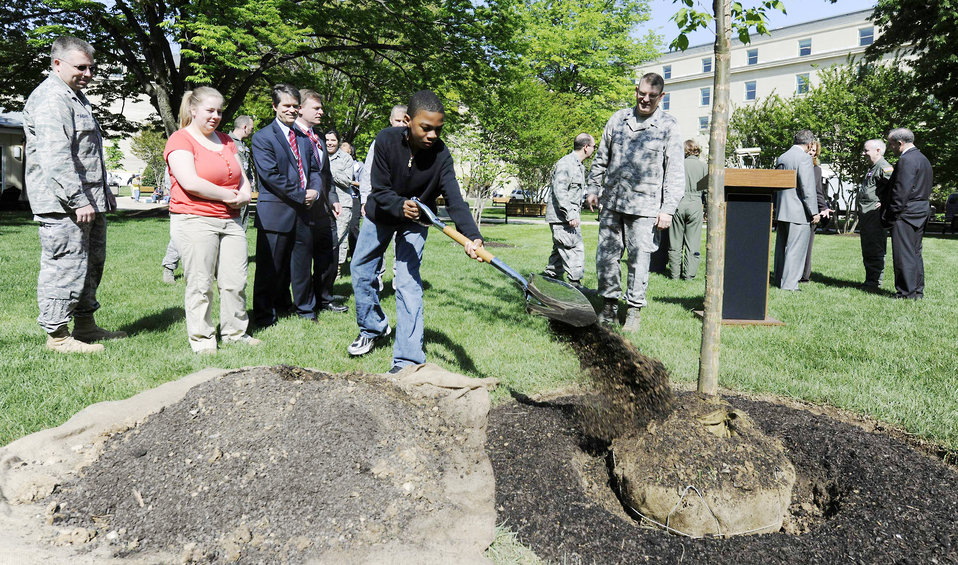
Pentagon officials join Air Force bases for '40 trees in 40 communities' tree planting

Thirteen-year-old Deante Dowdell, son of Maj. Richelle Dowdell, shovels soils onto a Valley Forge American elm as part of